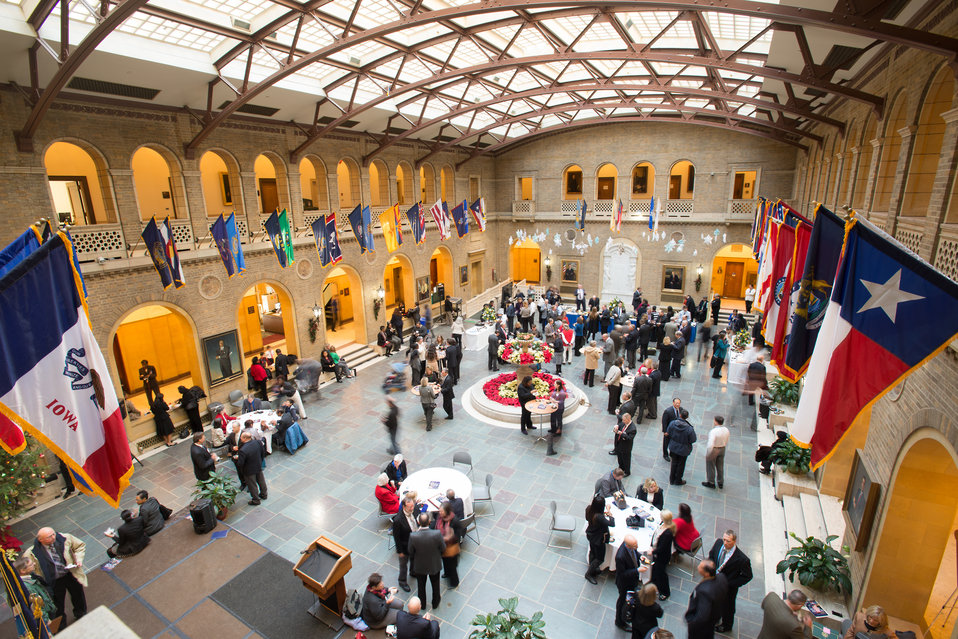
A reception for the 2013 Secretary's Honor Awardees, friends and families was held on the patio in the Whitten Building at the U.S. Department of Agriculture (USDA) in Washington, D.C. on Wednesday, Dec. 11, 2013.